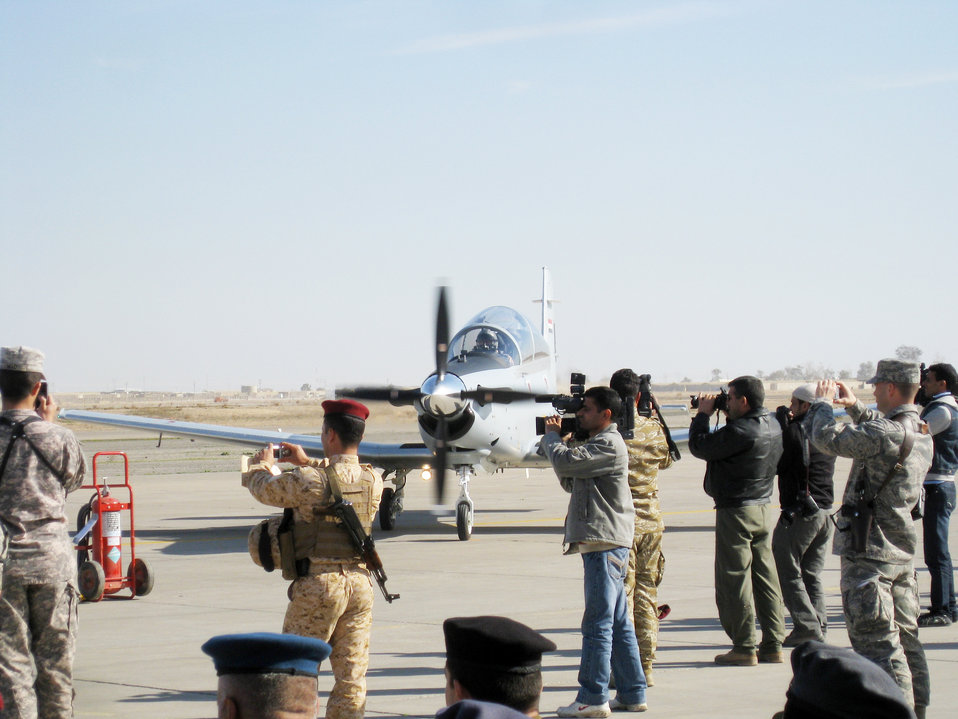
Airmen to train Iraqi air force college students

The first four T-6A trainer aircraft arrive Dec. 16, 2009, at the Iraqi air force college in Tikrit.